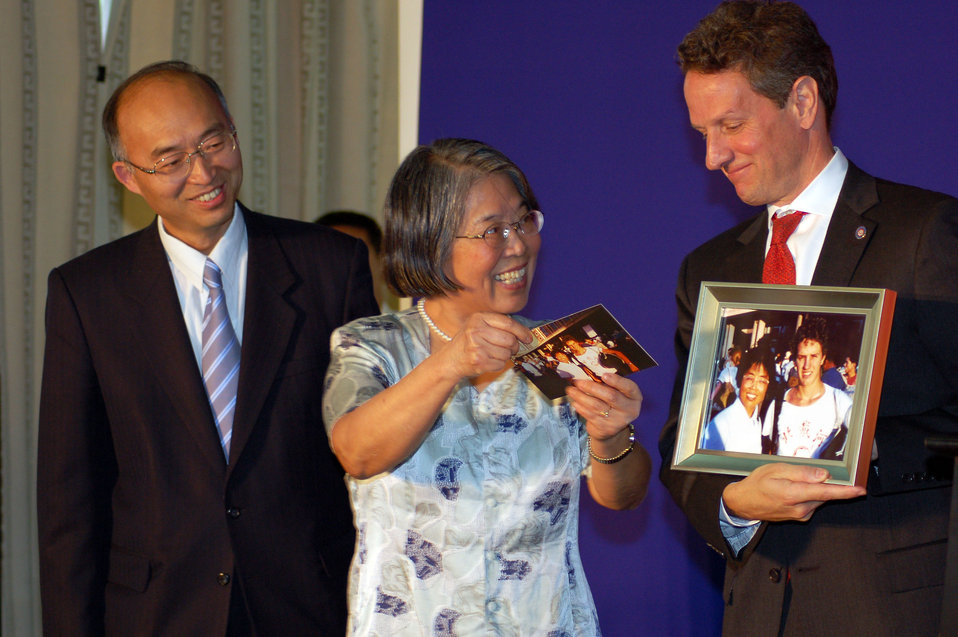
China trip: May 31-June 2 2009

A former professor presents Secretary Geithner with a photo of himself as a student at Peking University.